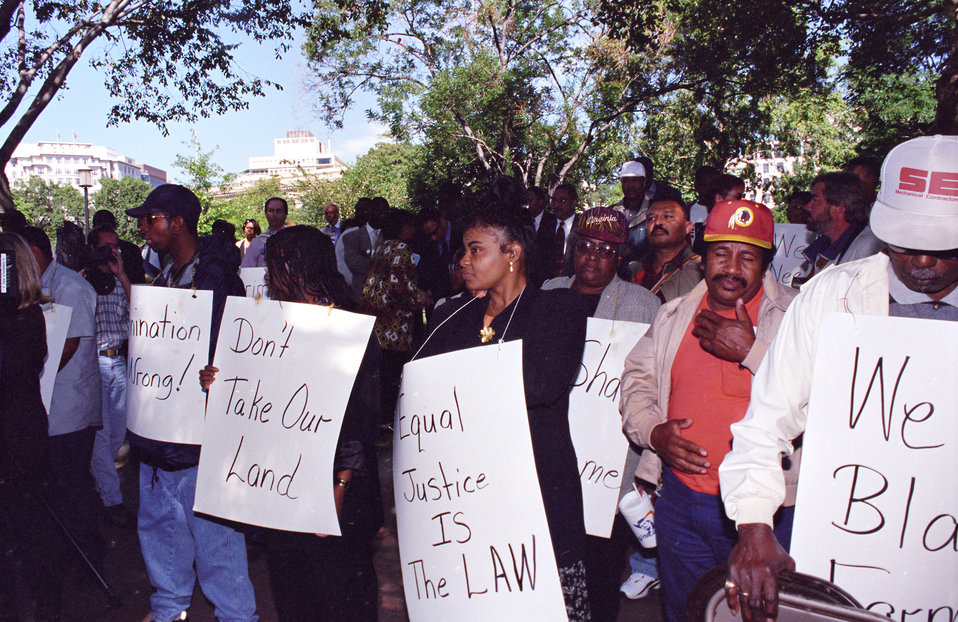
Black farmers protest at Lafayette Park across from the White House in Washington, D.C. on September 22, 1997. Protesters alleged the U.S. Department of Agriculture (USDA) denied black farmers equal access to farm loans and assistance based on their race. North Carolina farmer Timothy Pigford and 400 other black farmers filed the Pigford v. Glickman (Pigford I) class-action lawsuit against USDA in 1997. The USDA settled Pigford I in 1999.